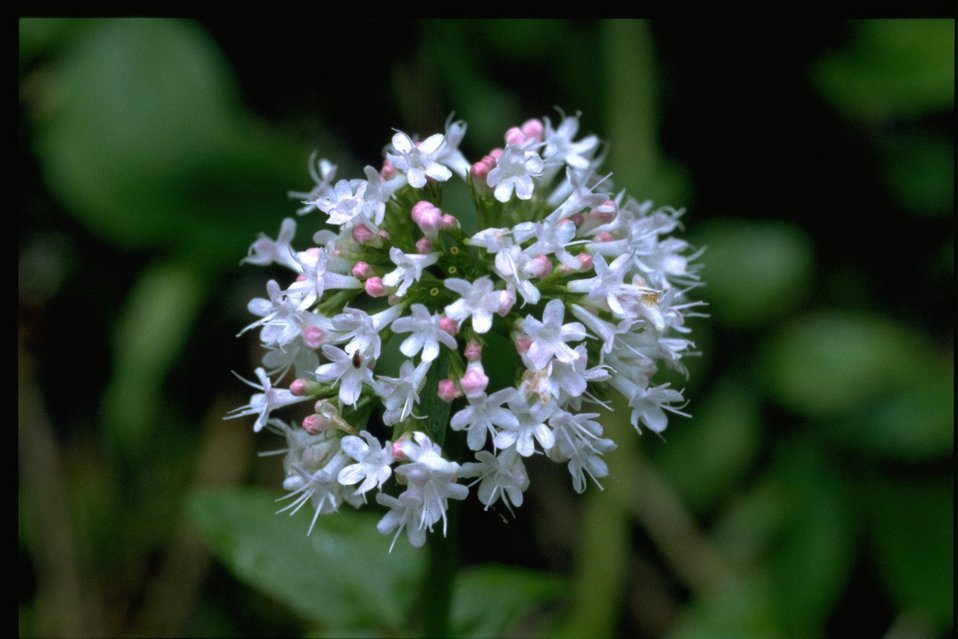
Closeup shot of Valeriana sitchensis.